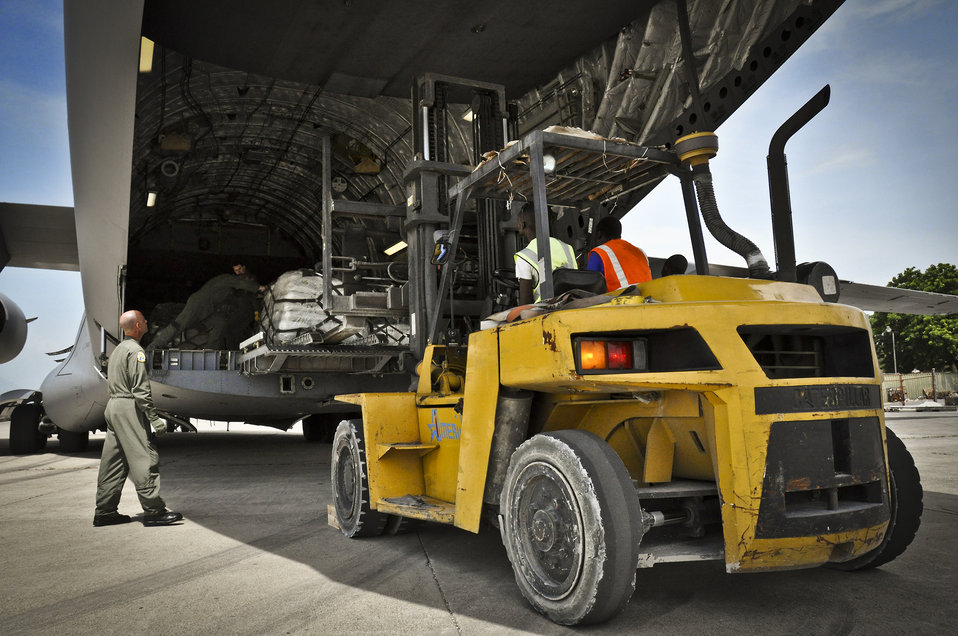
Aid to Haiti

Tech. Sgt. Arrin Baker checks the vertical clearance of a forklift July 1, 2011, during a humanitarian-aid off-load in Haiti. Baker is assigned to the 300th Airlift Squadron.